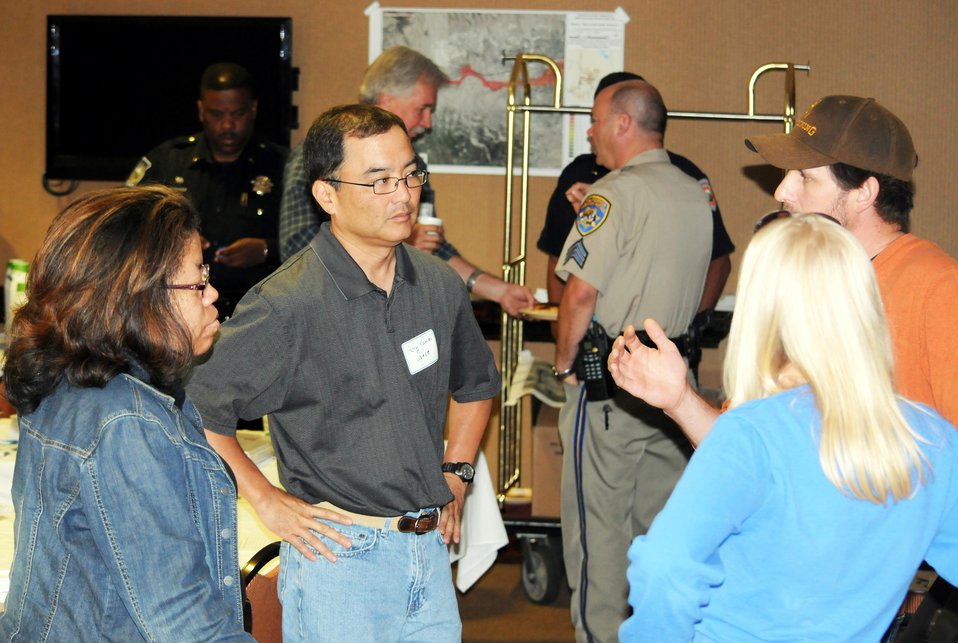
Martis Creek Dam emergency response exercise

(From left) Marchia Bond and Gary Kamei, engineers for the U.S. Army Corps of Engineers Sacramento District, speak with other participants at the Martis Creek Dam emergency response exercise in Truckee, Calif., Aug. 29, 2012. The exercise provided federal, state and local agencies an opportunity to work alongside each other and evaluate current emergency response plans and capabilities.

Martis Creek Dam, located about 32 miles southwest of Reno, Nev., was completed in 1972 and provides flood risk management and recreational benefits.